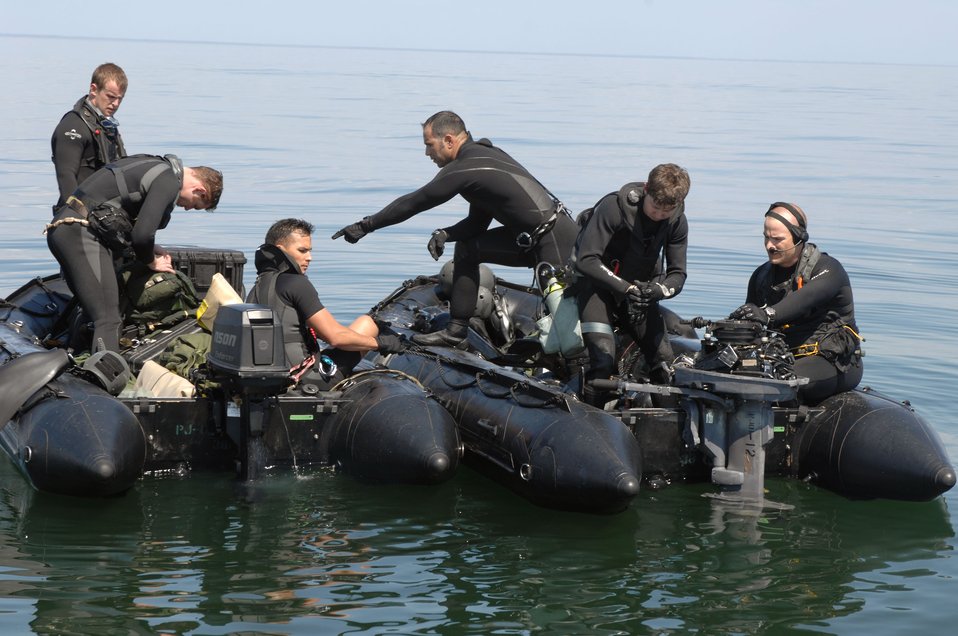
Commando Angel preps pararescuemen

A pararescue team from the 38th Rescue Squadron of Moody Air Force Base, Ga., prepares their gear for a crash recovery dive scenario March 22 in the Gulf of Mexico after a parachute drop. The scenario was part of Moody AFB's operational readiness exercise, Commando Angel.